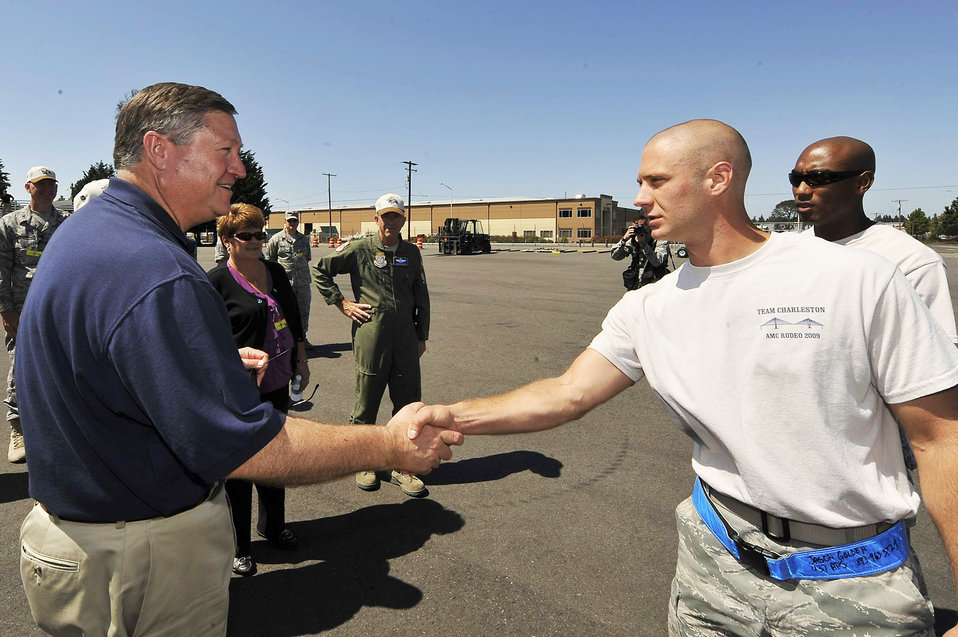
Secretary Donley visits mobility air forces competition

Senior Airman Jason Golden shakes hands with Secretary of the Air Force Michael B. Donley July 22 at McChord Air Force Base, Wash. Airman Golden just completed the 10K forklift event during Air Mobility Rodeo 2009. Airman Golden is assigned to the 437th Airlift Wing from Charleston Air Force Base, S.C.